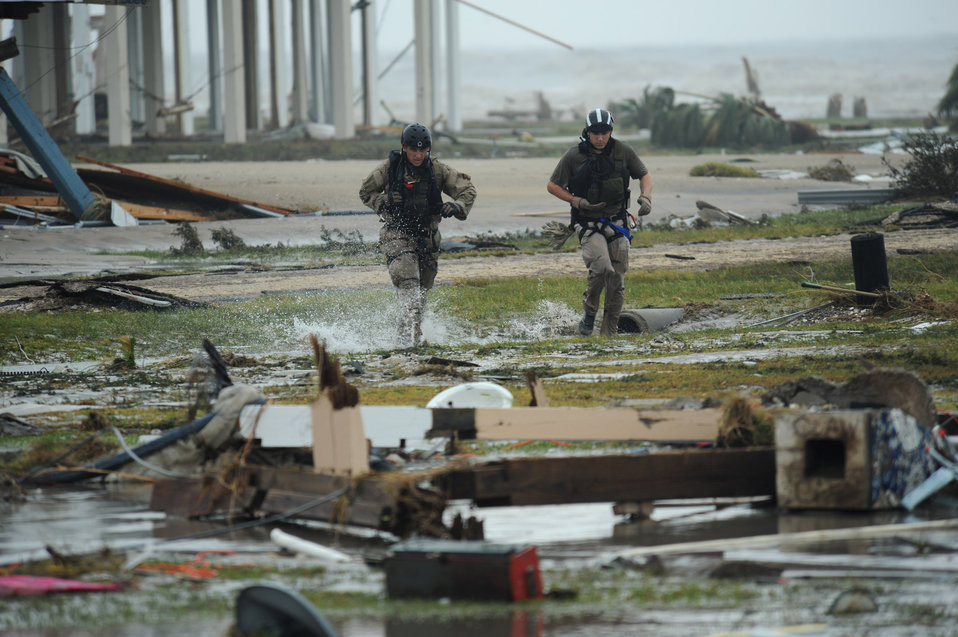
Airmen conduct search, rescue

Staff Sgt. Lopaka Mounts (left) and Senior Airman Brandon Smith run through a flooded portion of Galveston, Texas, searching for residents needing help during search and rescue operations after Hurricane Ike, Sept. 13. Sergeant Mounts and Airman Smith are both pararescueman assigned to the 331st Air Expeditionary Group at Randolph Air Force Base, Texas.